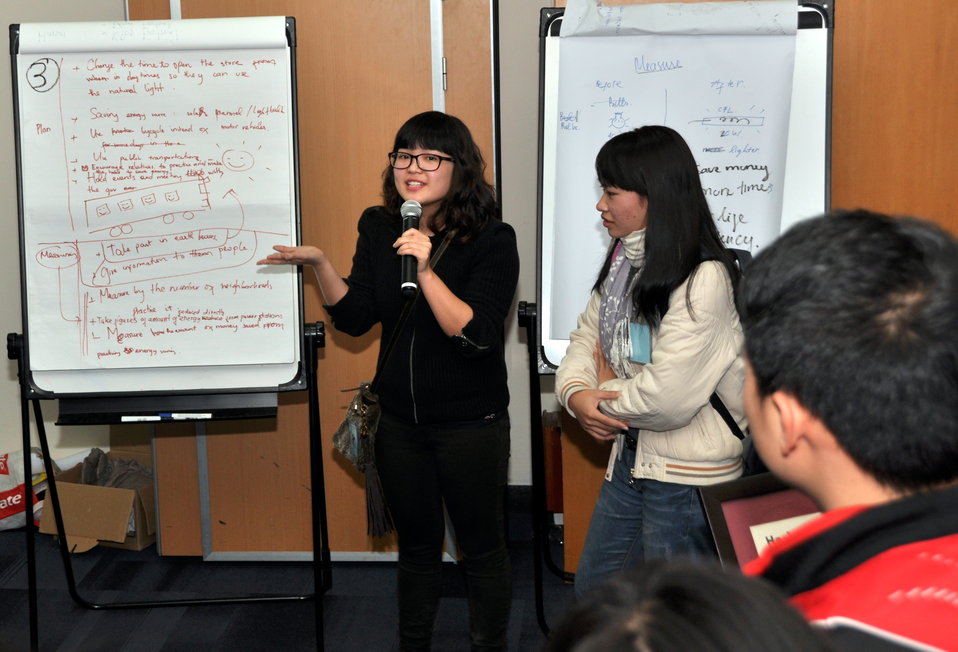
Speaker program on Climate Change and Clean Energy at the American Center

Hanoi, January 16, 2013